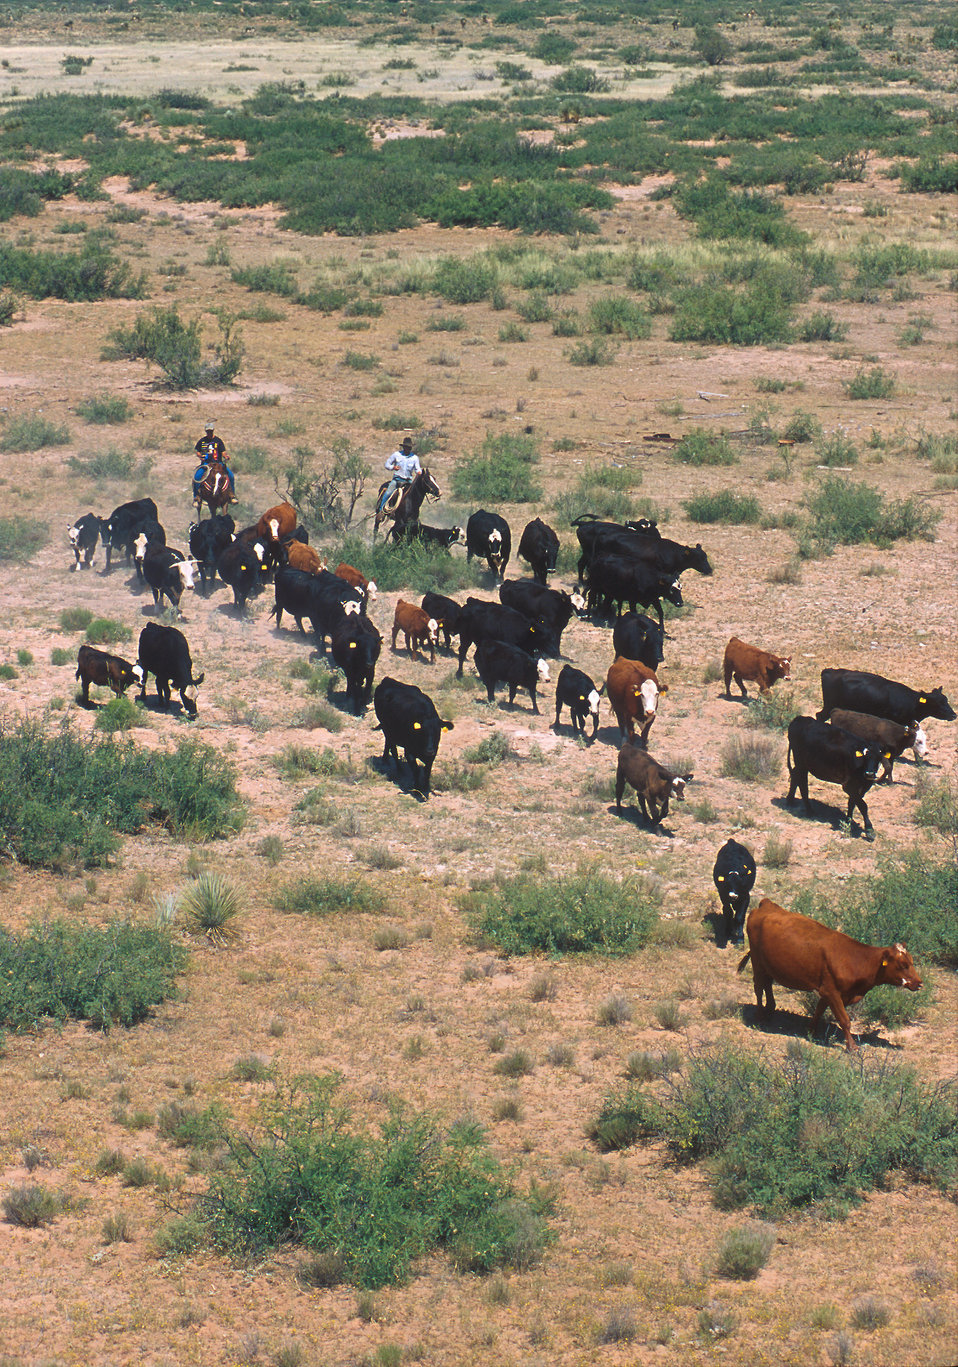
On the 300-square-mile U.S. Department of Agriculture (USDA) Agricultural Research Service (ARS) Jornada Experimental Range technicians Rob Dunlap and John Smith round up cattle the time-honored way in Las Cruces, NM. High-tech equipment may make roundups easier in the future.